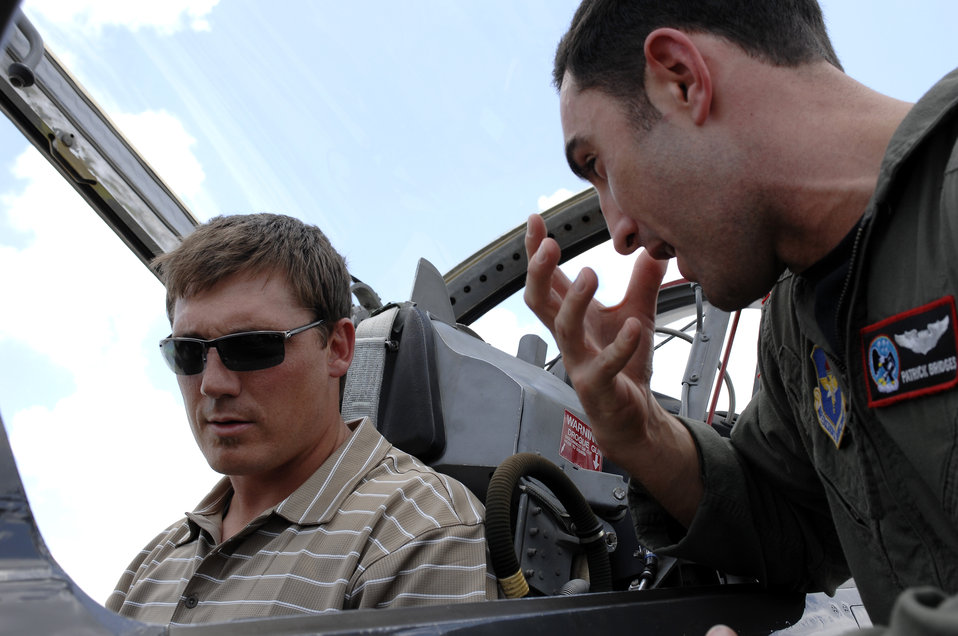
Indianapolis Colts visit Randolph Air Force Base

Capt. Patrick Bridges explains the cockpit of a T-38 Talon to Indianapolis Colts long snapper Justin Snow on the Randolph Air Force Base, Texas, flightline June 1. Colts team members spent the day visiting with base personnel and school children, enhancing the already strong relationship between the team and the Air Force.